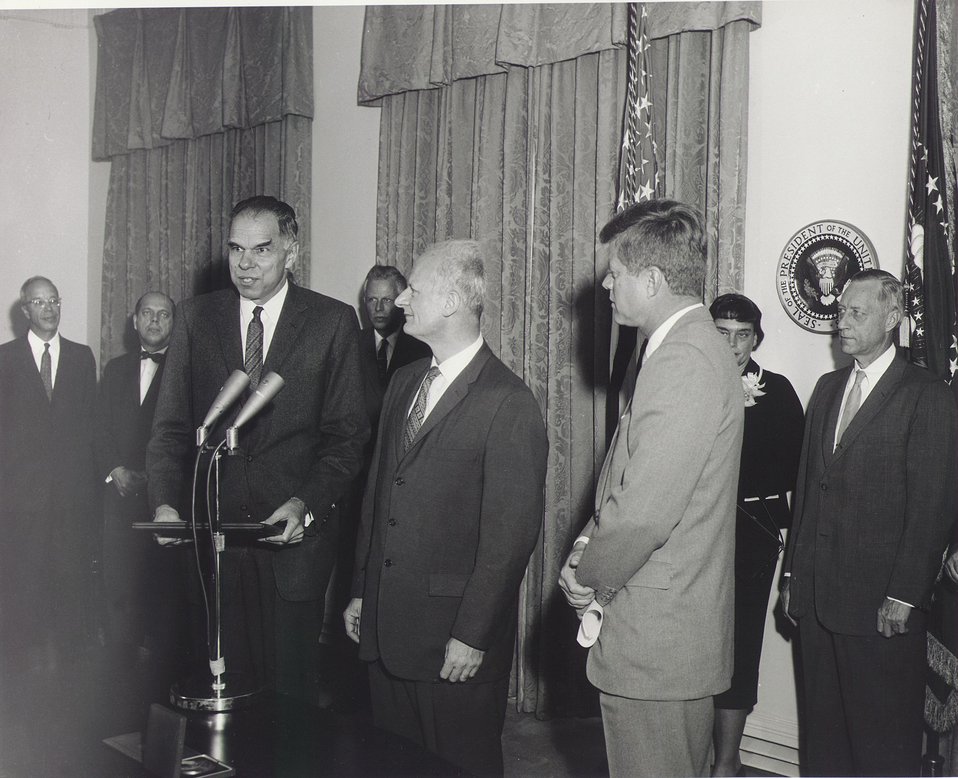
Fermi Award Ceremony for Dr. Bethe in Washington on Dec. 1, 1961.